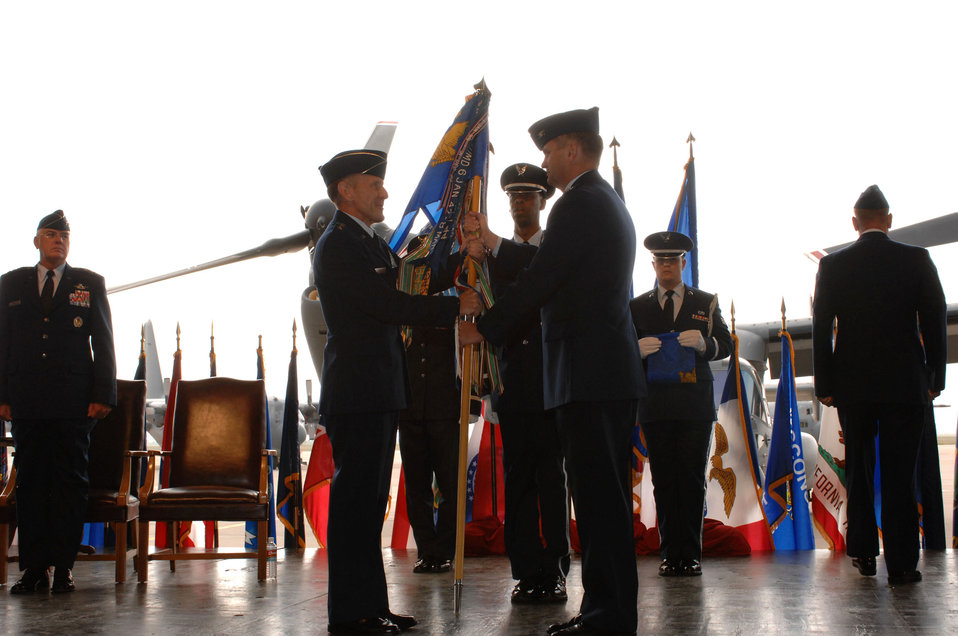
New chapter for Air Force Special Operations begins

Lt. Gen. Norman R. Seip (left) accepts the guidon from Col. Scott West as he relinquishes command of the 27th Fighter Wing in a change-of-command ceremony Oct. 1. The ceremony inactivated the 27th FW, which was then redesignated as the 27th Special Operations Wing. General Seip is the 12th Air Force commander